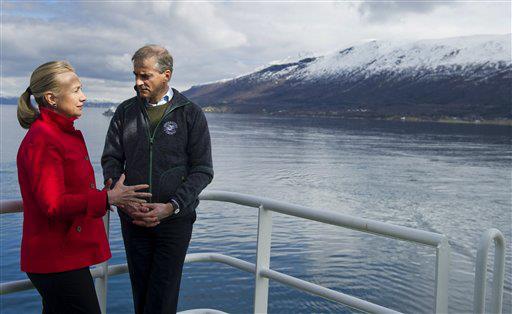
Secretary Clinton and Norwegian Foreign Minister Store Participate in an Arctic Research Vessel Tour

U.S. Secretary of State Hillary Rodham Clinton and Norwegian Foreign Minister Jonas Gahr Store participate in an Arctic research vessel tour in Tromso, Norway, on June 2, 2012.